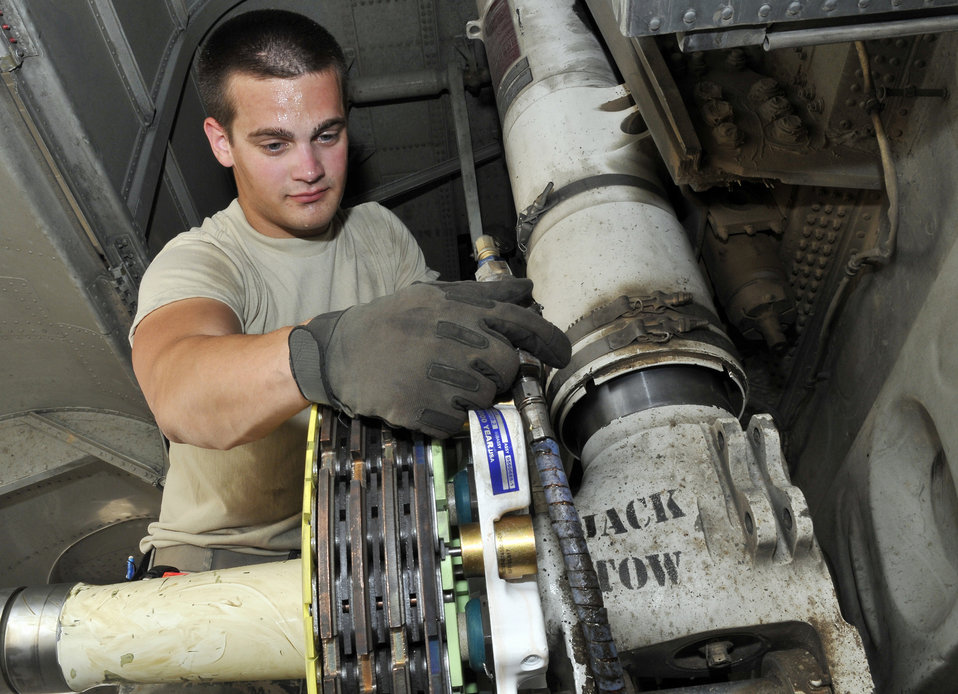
All in a row

Senior Airman Joshua Arrington aligns a brake assembly on a C-130 Hercules after a brake change June 18, 2010, at Joint Base Balad, Iraq. Airman Arrington is a crew chief with the 777th Expeditionary Airlift Maintenance Unit, and deployed from Little Rock Air Force Base, Ark.